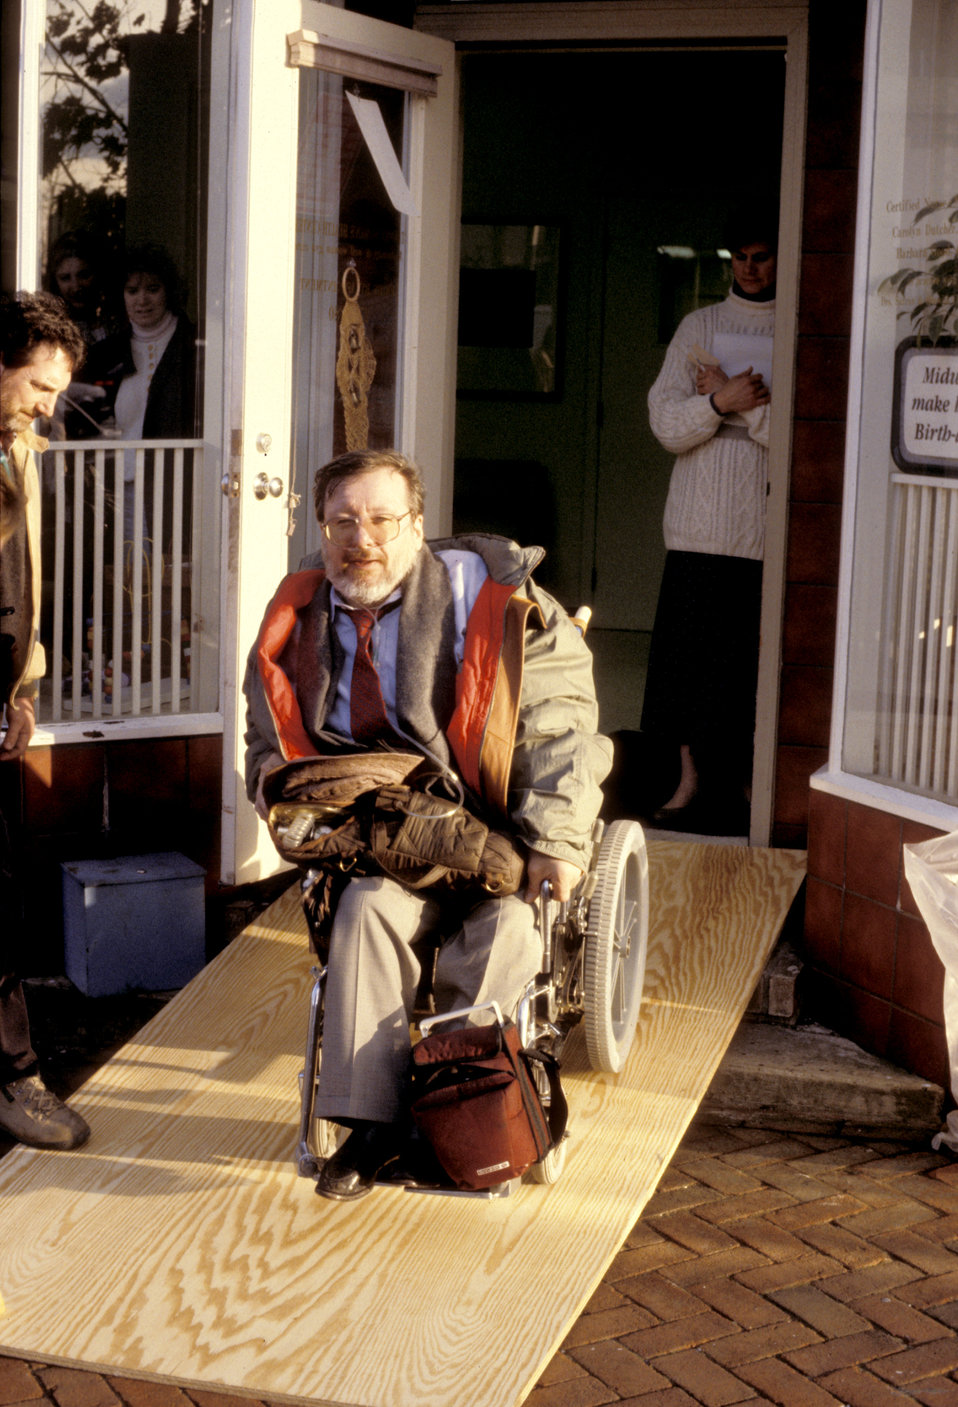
In this 1993 image, the front of a women's clinic revealed a front door that was accessed via a two-step stoop, which made accessibility an issue for the wheelchair-seated man shown here exiting the premises. Visits by individuals having problems with mobility, prompted the installation of this temporary plywood ramp. Though the temporary ramp made access easier for the mobility-challenged, it was constructed in such a way as to make it a dangerous, though short-term solution (see PHIL 9022 - 9024, and 9026). PHIL image 9027 - 9029 depicted a long-term, permanent solution using a brick, concrete, and metal ramp. It was not the perfect solution, for it lacked adequate maneuvering room near the clinic doorway. It also clearly appeared as an add-on, or after-the-fact solution that protruded into the wide sidewalk, while attempting to blend in with the existing buildings by using brick, colored concrete, and wrought iron rails. Stairs had also been provided.